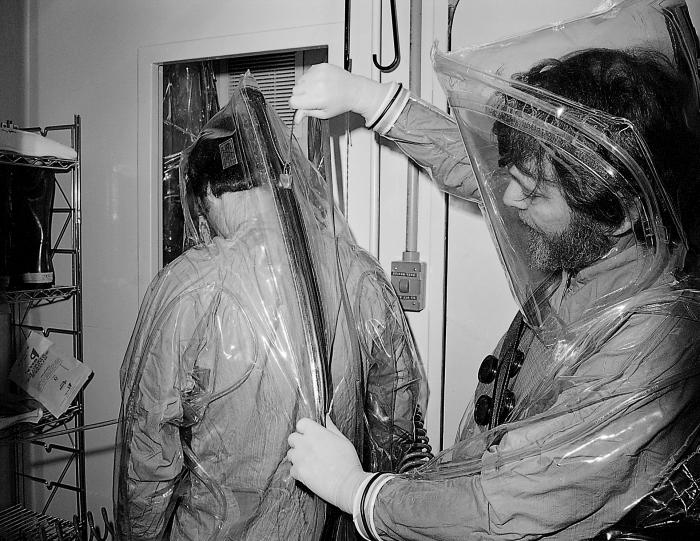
This 1978 photograph depicted Dr. Karl M. Johnson securing the zippered opening of a positive-pressure suit worn by his colleague, Dr. J.V. Lange prior to them entering one of the CDC's early Maximum Containment Laboratories.